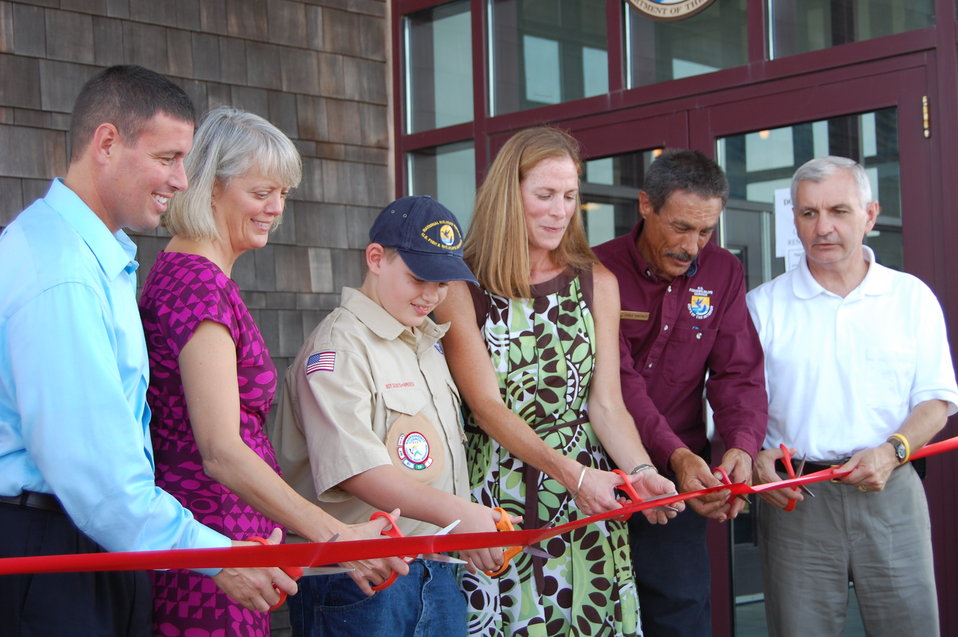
Ribbon Cutting

Sen. Jack Reed of Rhode Island, Refuge Manager Charlie Vandemoer, U.S. Fish and Wildlife Service Northeast Regional Director Wendi Weber, Boy Scout and refuge volunteer Edward Gentry, RI Department of Environmental Management Director Janet Coit, and Middletown Council member Edward Silveira cut the ribbon to re-open the visitor center at Sachuest Point National Wildlife Refuge on August 24, 2012.